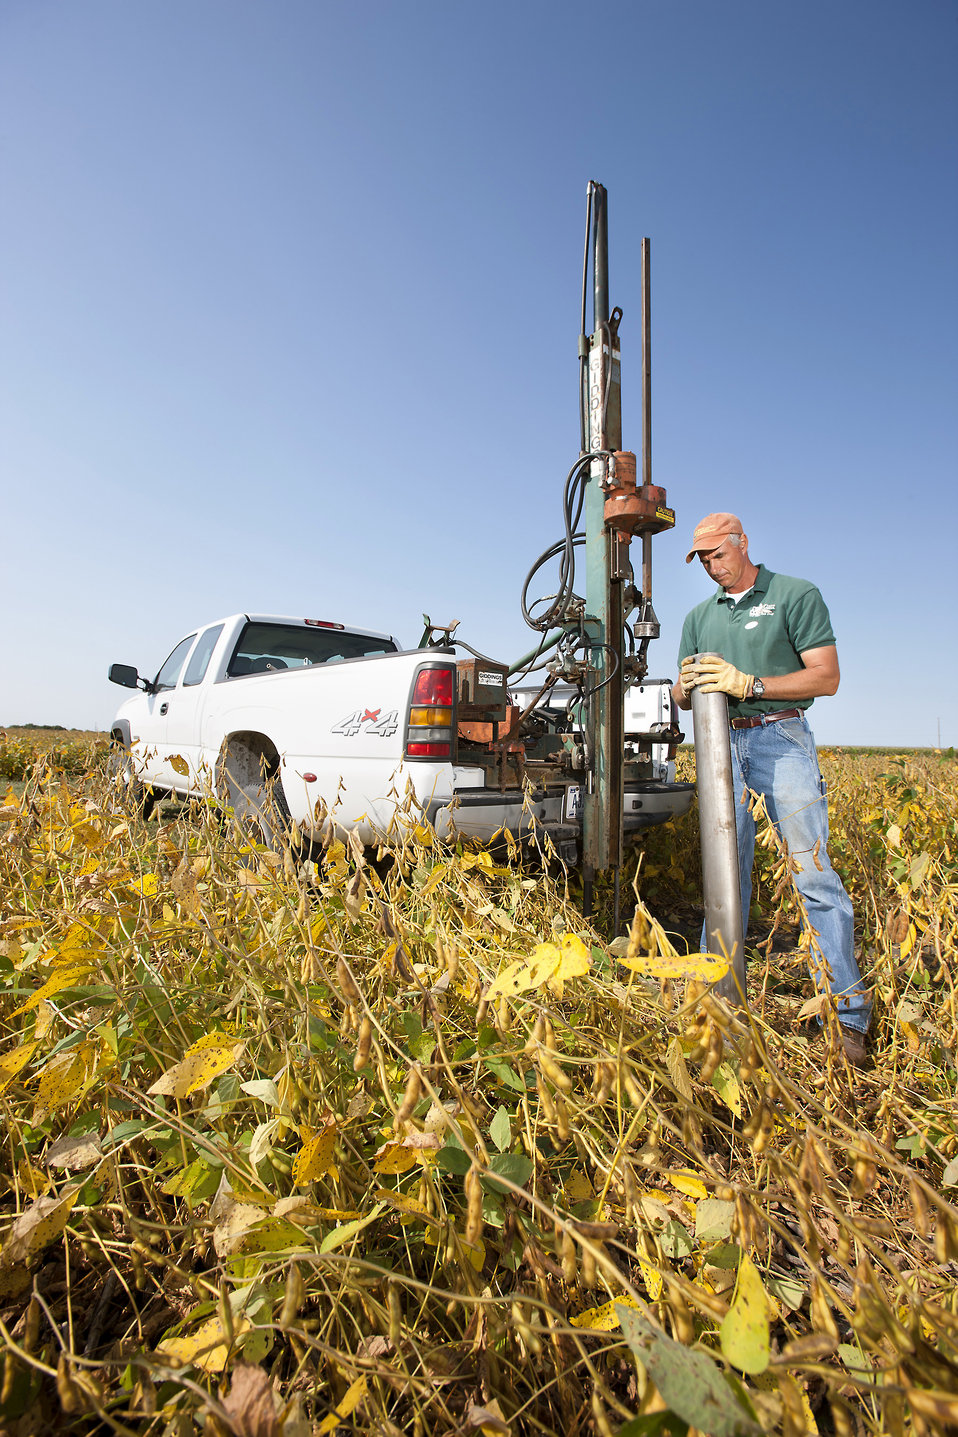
U.S. Department of Agriculture (USDA Agriculture Research Service (ARS) technician Kent Heikens prepares a large core sampler to take a core sample of the wood chip bioreactor beneath a soybean field for lab analysis of denitrification rates and bacterial populations on Jan. 24, 2003.